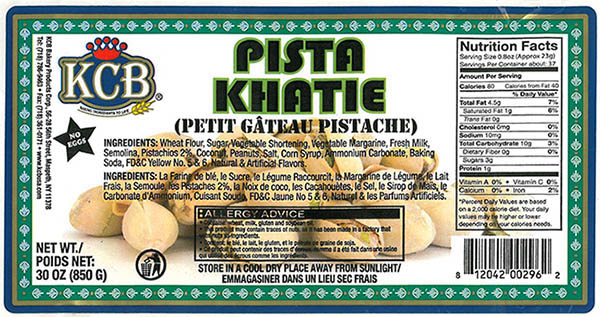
RECALLED – Pista Khatie (cookies)

October 21, 2013 – Product Recall – Kashmir Crown Baking LLC Issues Allergy Alert on Undeclared Eggs on KCB Pista Khatie.